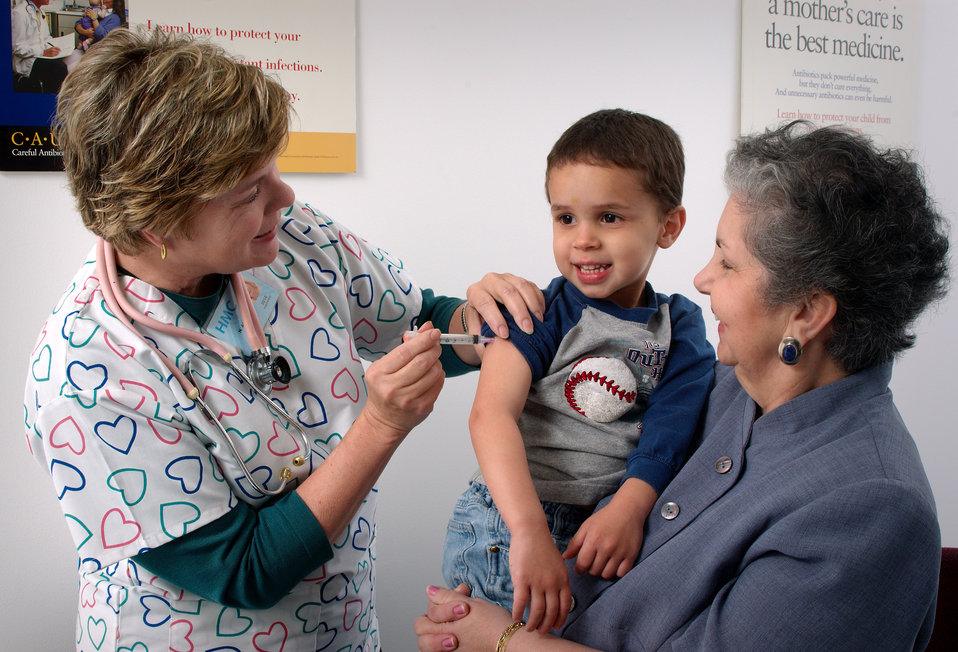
The 3-year old boy shown in this 2006 image, as well as PHIL 9299 and 9303, was receiving an immunization injection in his right shoulder.